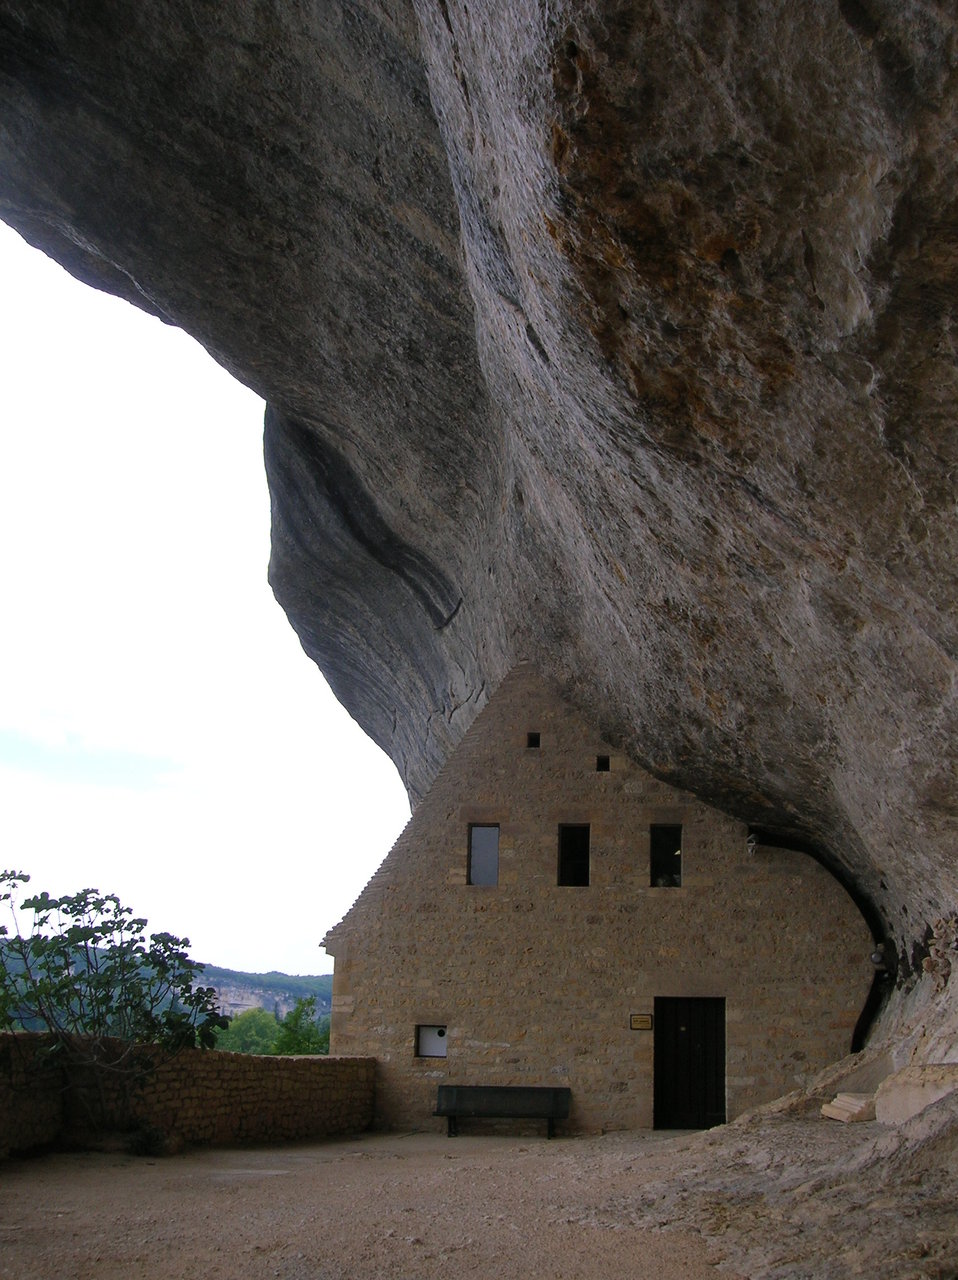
Troglodyte in Les Eyzies, Dordogne, France. Fran√ßais†: Troglodytes aux Eyzies, Dordogne, France